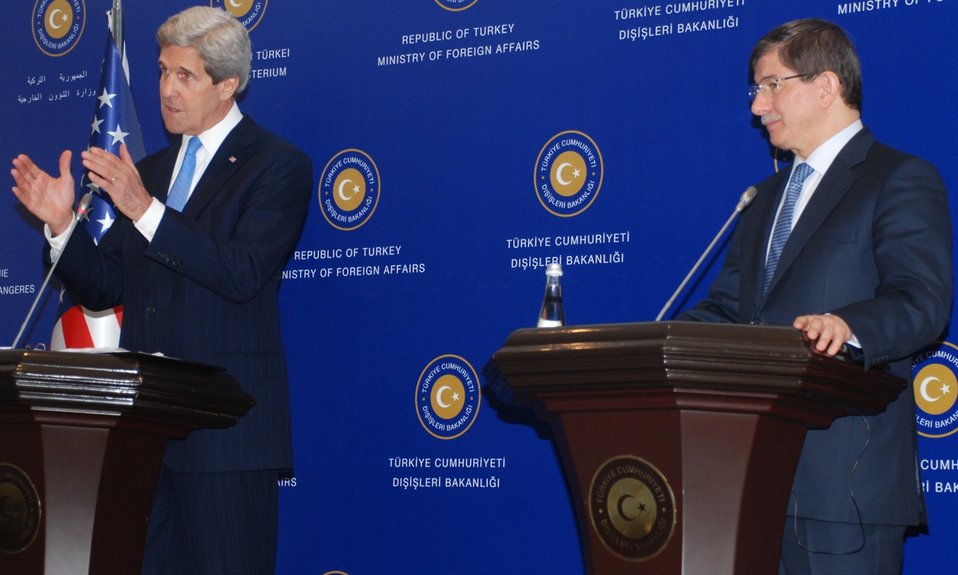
Secretary Kerry and Foreign Minister Davutoglu Deliver Remarks at Joint Press Availability in Istanbul, Turkey

U.S. Secretary of State John Kerry and Turkish Foreign Minister Ahmet Davutoğlu deliver remarks at a joint press availability in Istanbul, Turkey, April 7, 2013.